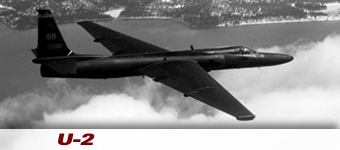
U-2 history spotlight graphic